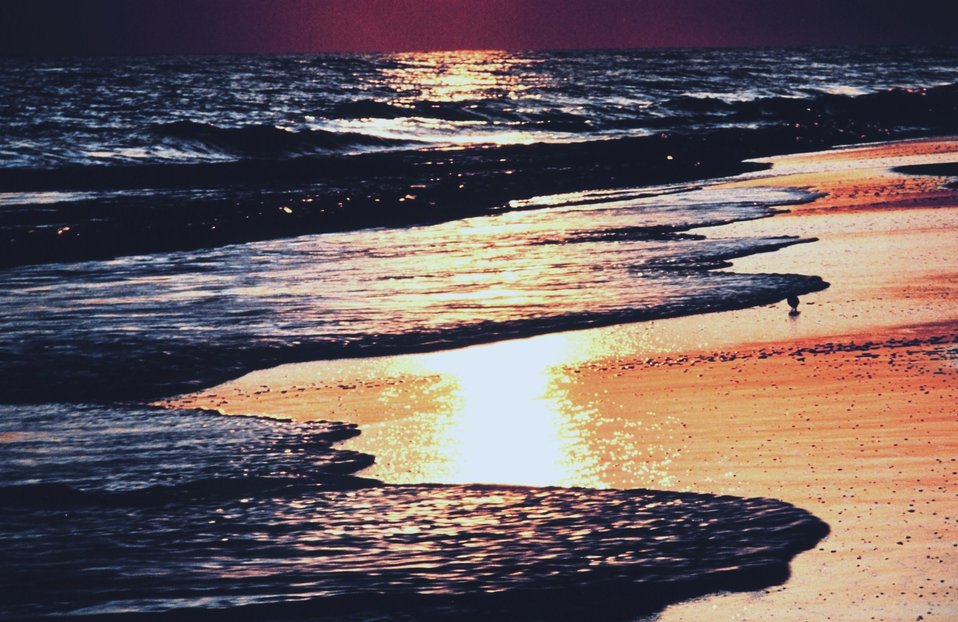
Sunset at Pensacola Beach